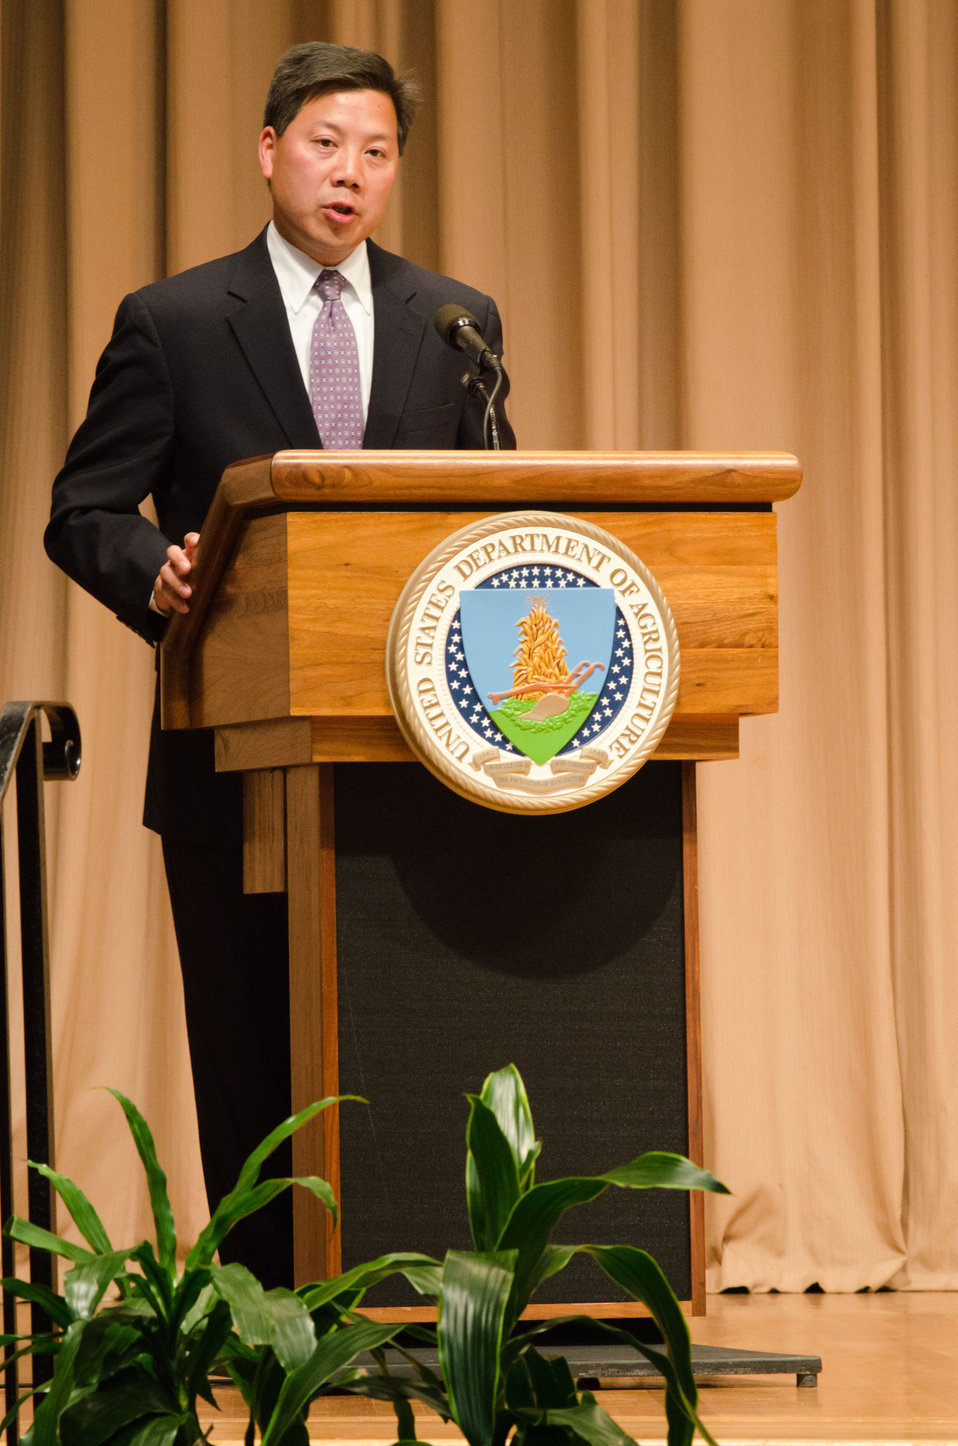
Assistant to the President and Cabinet Secretary The White House Chris Lu was the guest speaker at the 2012 Asian Pacific American Heritage Observance “Striving for Excellence in Leadership, Diversity and Inclusion” at the U.S. Department of Agriculture in Washington, D.C. on Thursday, May 24, 2012. Lu is President Obama’s primary liaison to the Cabinet departments and agencies, helping to coordinate policy and communications strategy and serves as co-chair of the White House Initiative on Asian Americans and Pacific Islanders.